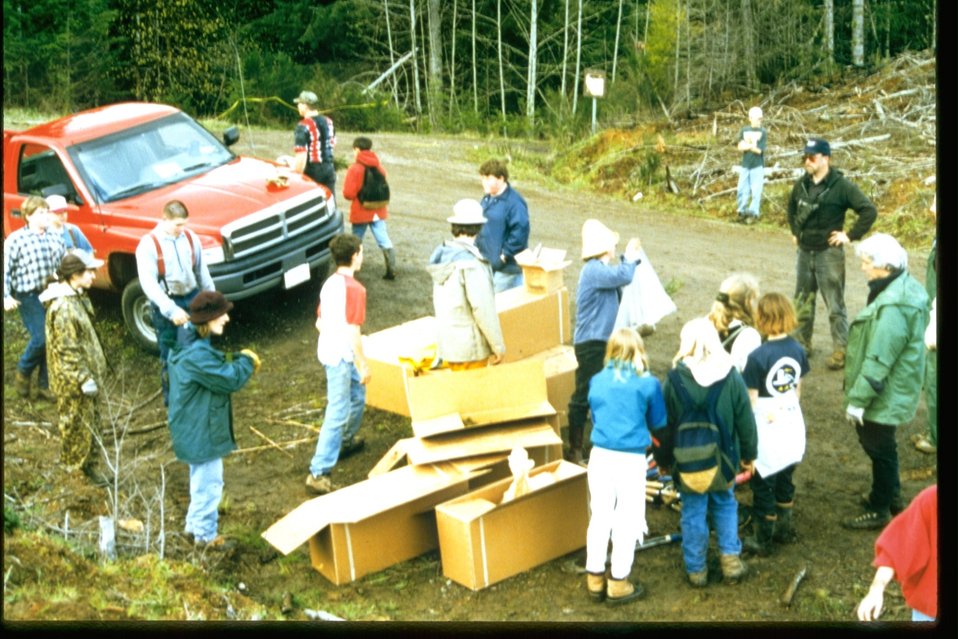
Lower Umpqua Treeplanting.